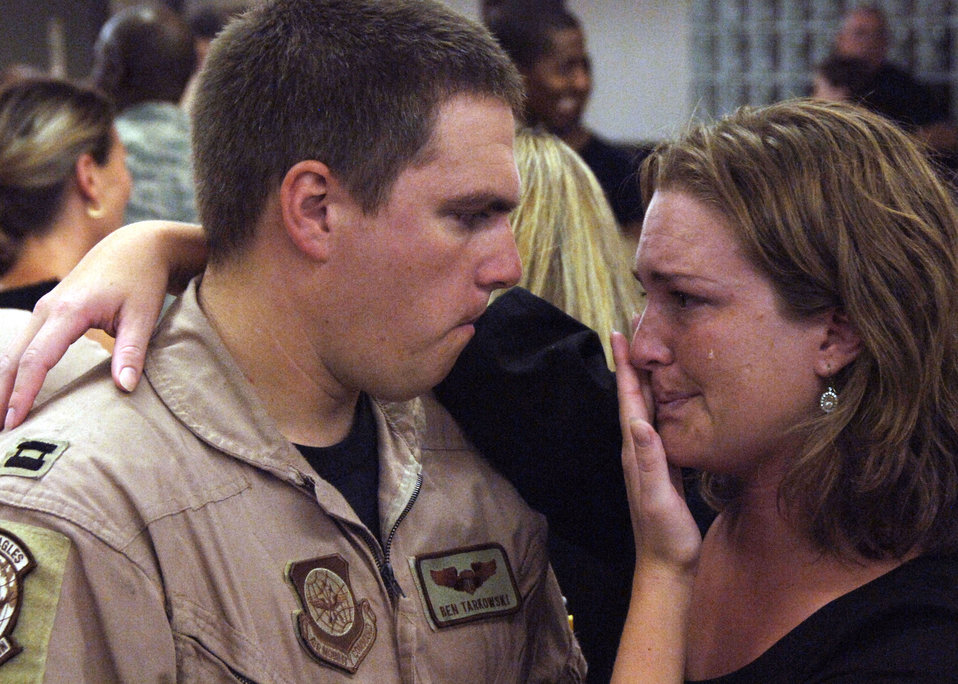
Charleston Airmen deploy to support war on terrorism

Capt. Ben Tarkowski and wife, Ericka, say their goodbyes before leaving each other's side Aug. 27 at Charleston Air Force Base, S.C. Members of the 15th Airlift Squadron are deploying to Southwest Asia and will replace the 14th Airlift Squadron from Charleston AFB, who will be returning home. Captain Tarkowski is with the 15th AS.